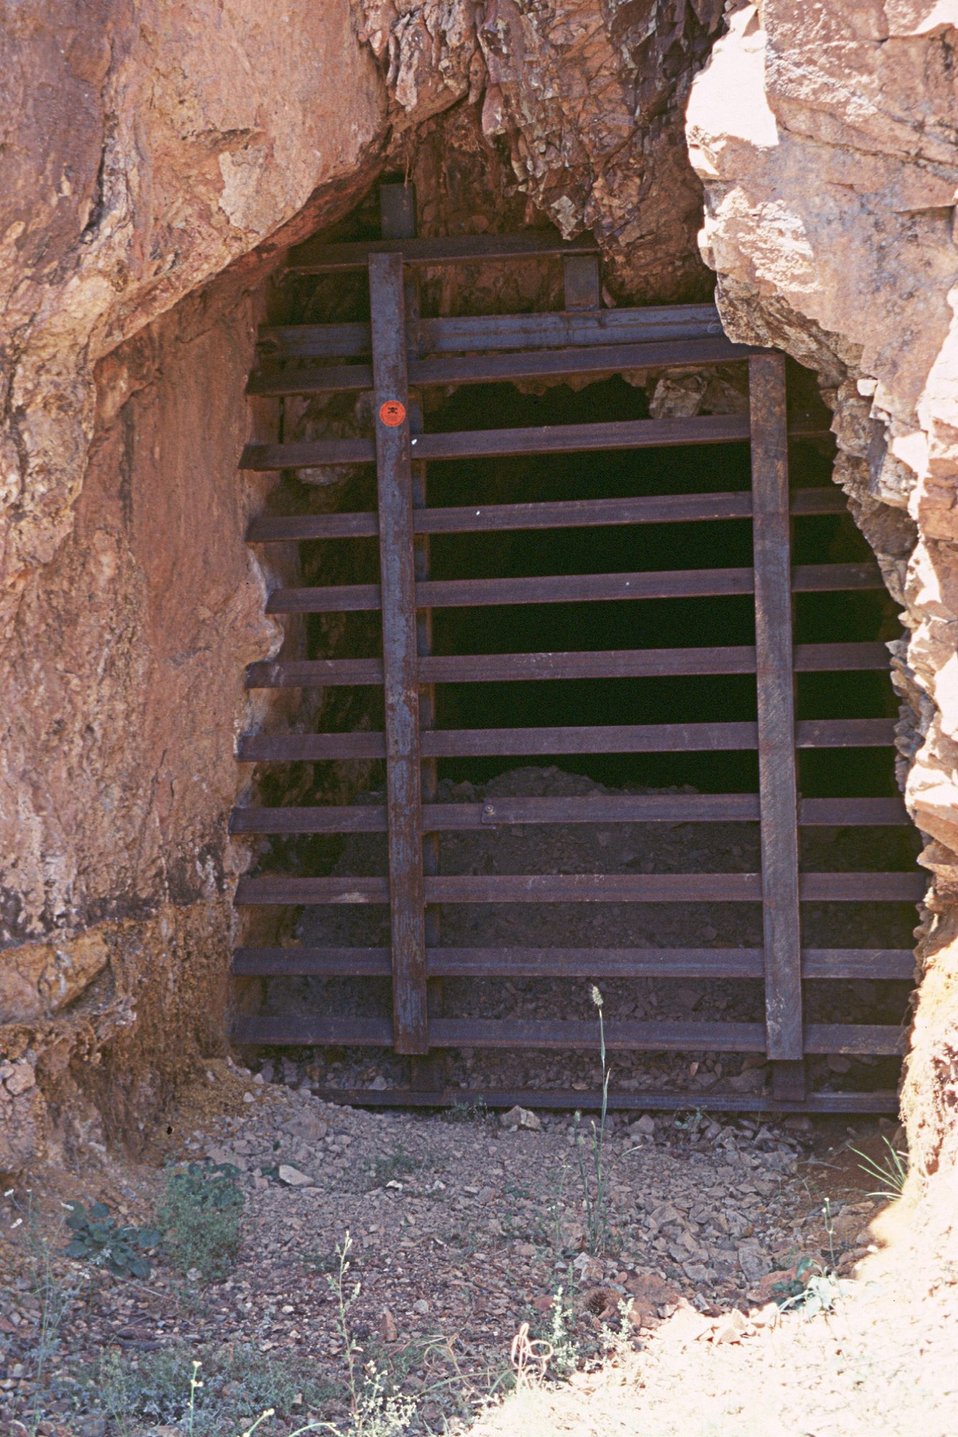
Almeda Mine, Medford District. Mine entrance, Bat Grate.